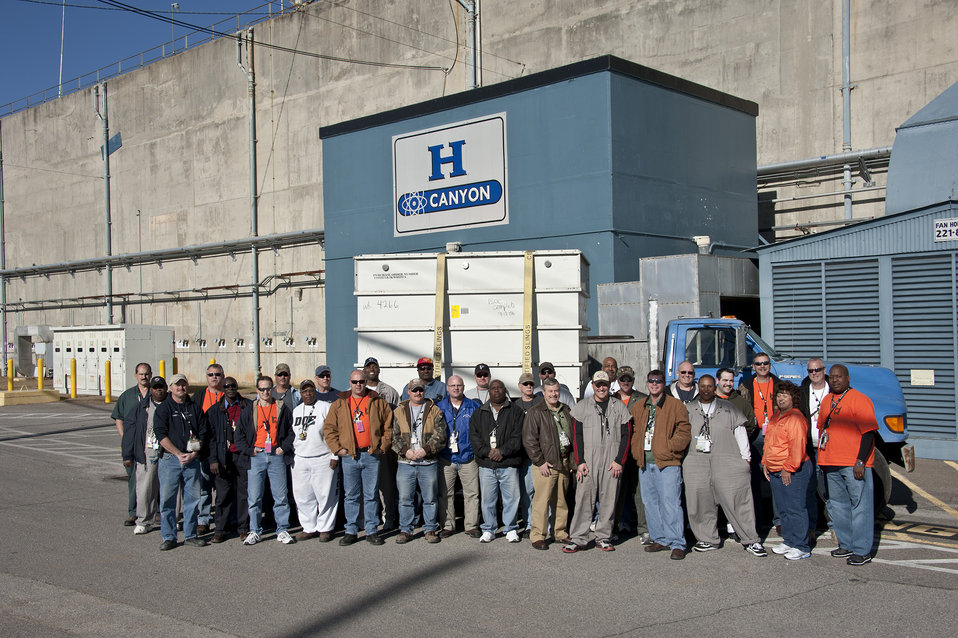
Recovery Act accelerated cleanup

The H Canyon box remediation team at the Savannah River Site.

At H Canyon — the only operational nuclear chemical separations plant in the U.S. — the legacy transuranic waste repackaging team is reducing the size of the glove boxes containing transuranic waste and repackaging them for shipment to the Waste Isolation Pilot Plant in New Mexico for safe, permanent disposal.